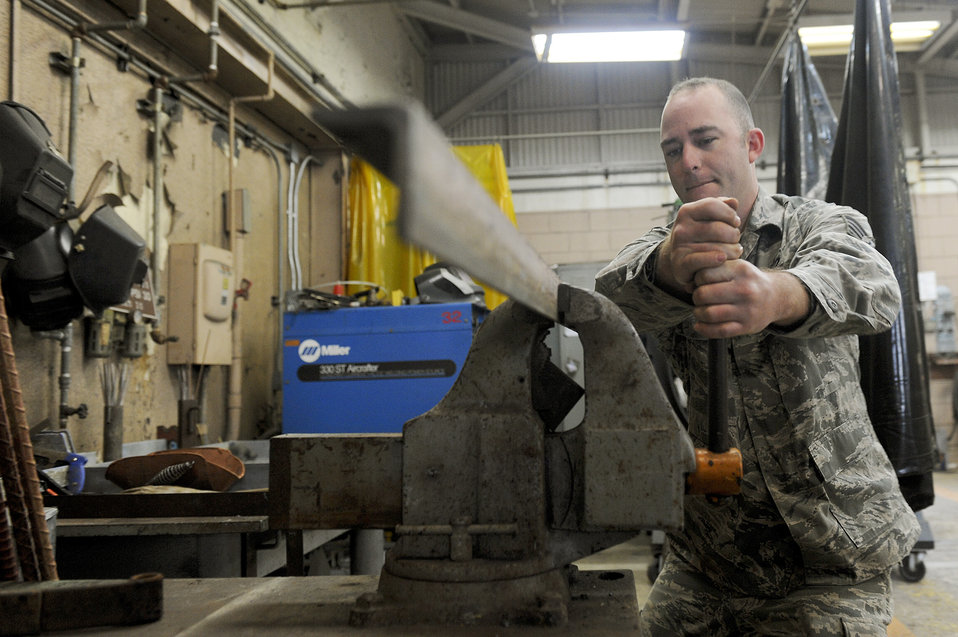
Air Force awards

Staff Sgt. Jason Vick clamps down a piece of angle iron for welding Jan 10, 2010, at Kadena Air Base, Japan. Sergeant Vick is a member of the 18th Civil Engineer Squadron's Operations Flight. The flight was recently awarded the 2010 Major General Clifton D. Wright Award, which recognizes the most outstanding CE operations flight in the performance of quality maintenance, repair, and improvement of installation facilities and infrastructure.